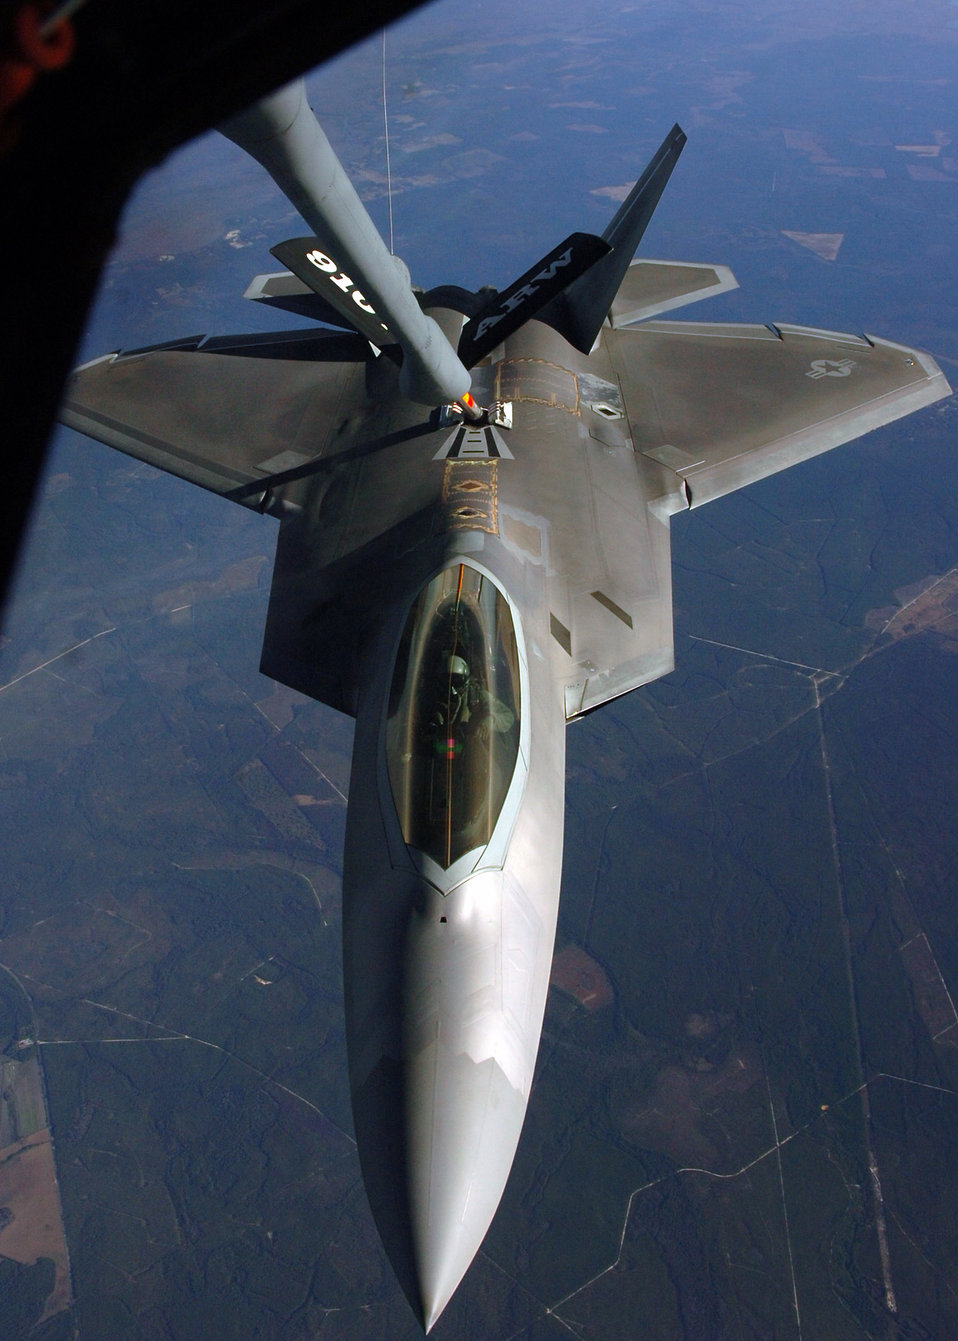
Feeding the Raptor

An F-22 Raptor receives fuel from a KC-135 Stratotanker during an air-to-air refueling training mission Dec. 4 over Eglin Air Force Base, Fla. The F-22 is from the 43rd Fighter Squadron at Tyndall AFB, Fla. The KC-135 is from the 916th Air Refueling Wing, an Air Force Reserve wing located at Seymour Johnson AFB, N.C.